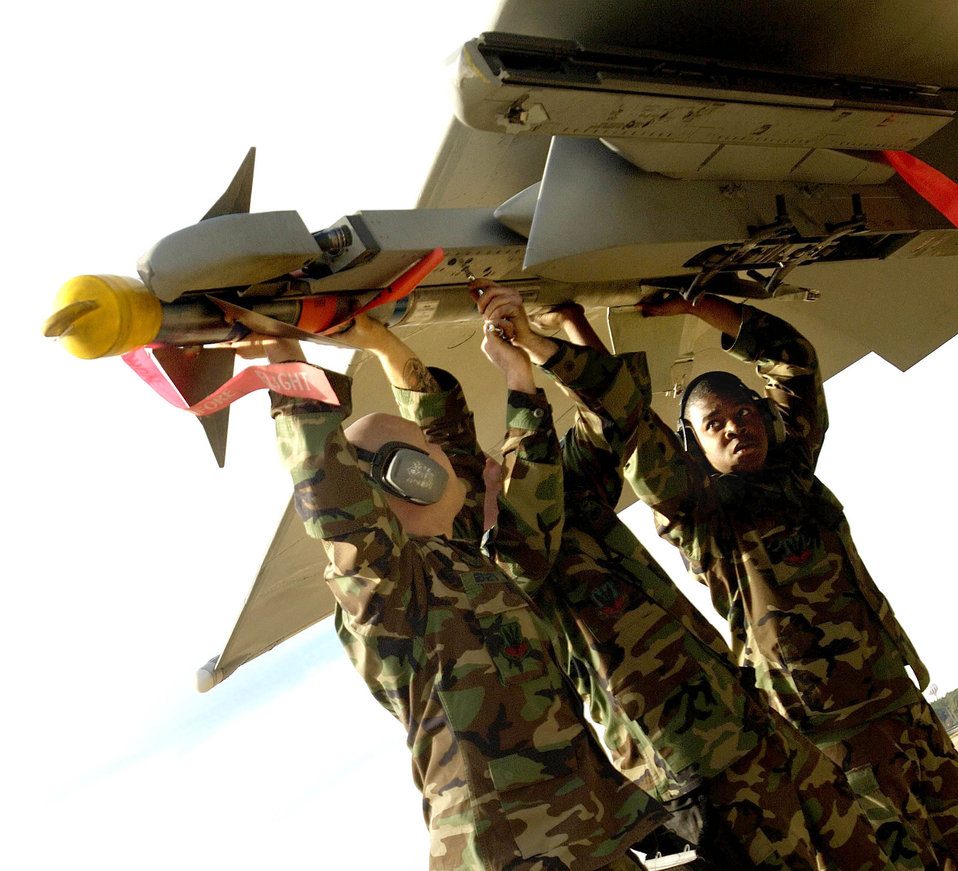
Up to the challenge

LANGLEY AIR FORCE BASE, Va. (AFPN) - (Left to right) Staff Sgt. Jason Larkins, and Senior Airmen Michael Gergets and Aaron Scott secure an AIM-9 missile to an F-15 Eagle during the load crew of the year event here in January. The event was part of the 1st Fighter Wing annual load competition and was the first one to include the F-22A Raptor. The 71st Fighter Squadron won the event. The Airmen are assigned to the 71st's aircraft maintenance unit.